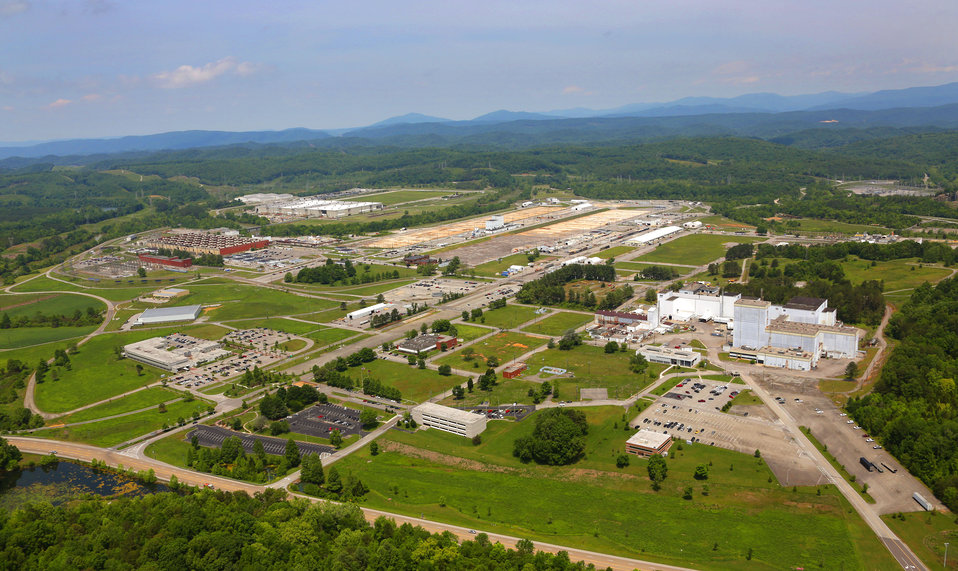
ETTP aerial 2014 Oak Ridge

JRO 0578 ORNL photo Jason Richards 5-20-2014 Oak Ride Tennessee